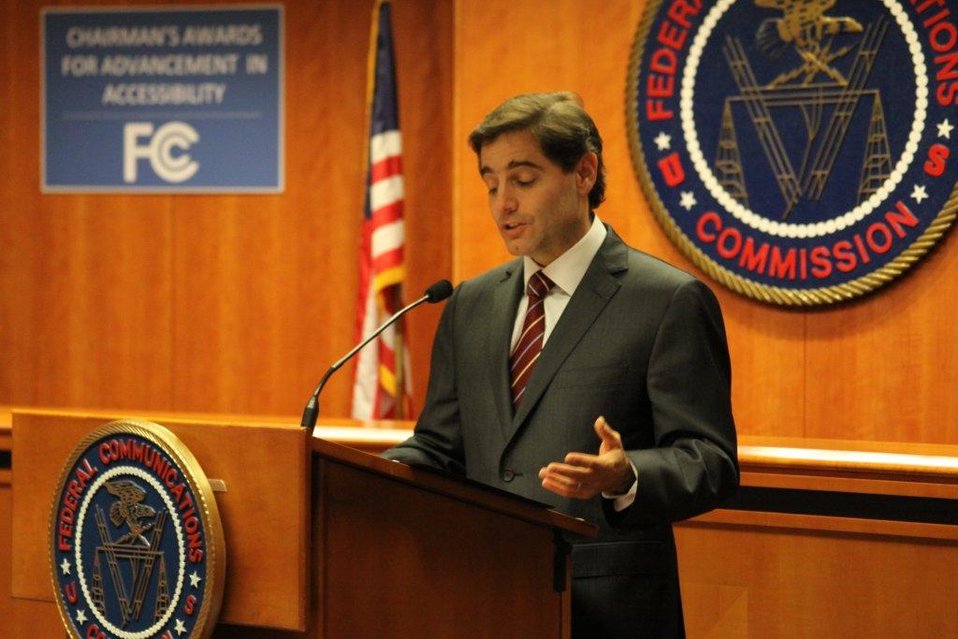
Chairman Genachowski Giving Remarks at the Advancement in Accessibility Awards